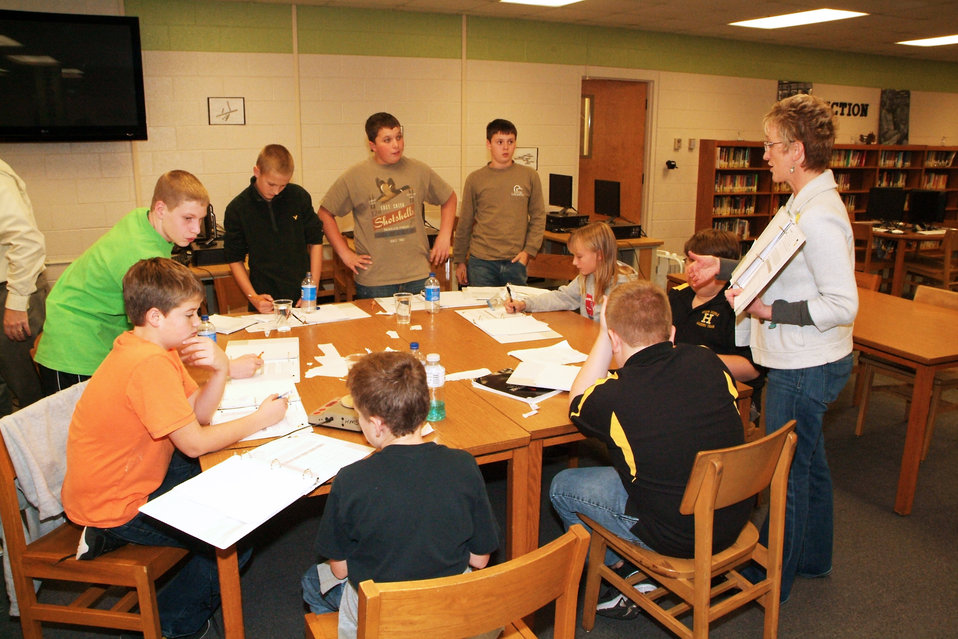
Heath Middle School Science Project Ongoing at Paducah Site

Kelly Layne of the LATA Kentucky team tells Heath Middle School students how to use zinc pennies in an experiment with differing known and unknown solutions. Facing, from left, are students Atherton Milford, McKenzie Moss, Trevor Kendall, Max Kolb, and James Michael Dodd.

Twenty-six of Heath Middle School’s brightest science students spent the 2011-12 school year helping DOE try to resolve a real environmental issue at the Paducah site.

Mentors assigned to each grade — sixth, seventh, and eighth — taught students investigative techniques as the school year progressed. The students used data and information to produce a presentation with tables, graphs, and charts. Three groups of students, representing their respective grades, presented their findings and recommendations April 20, 2012.